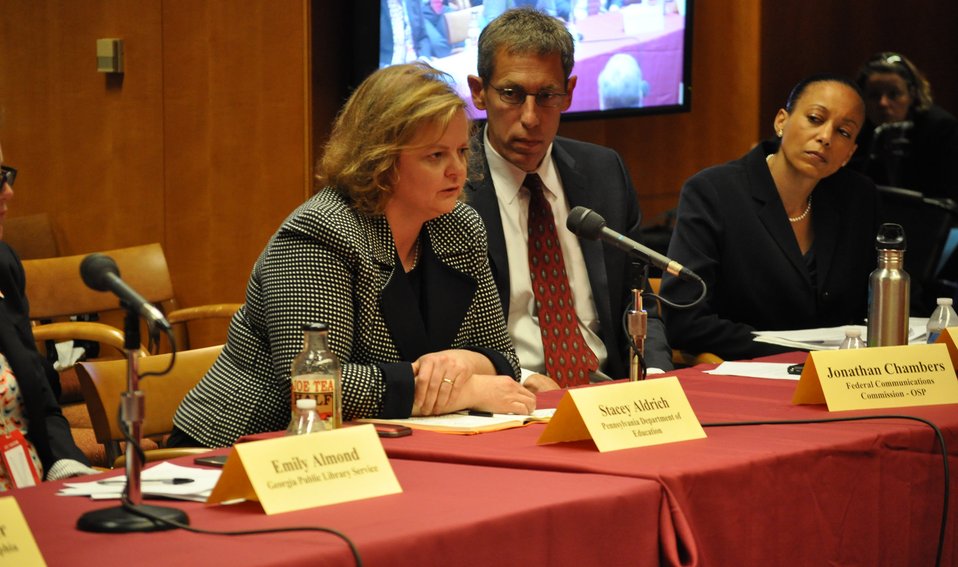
5.6.2014 E-Rate Modernization Workshop

Education and Library Technology Experts Roundtable: Enabling the Lowest “E-rate” for Schools and Libraries